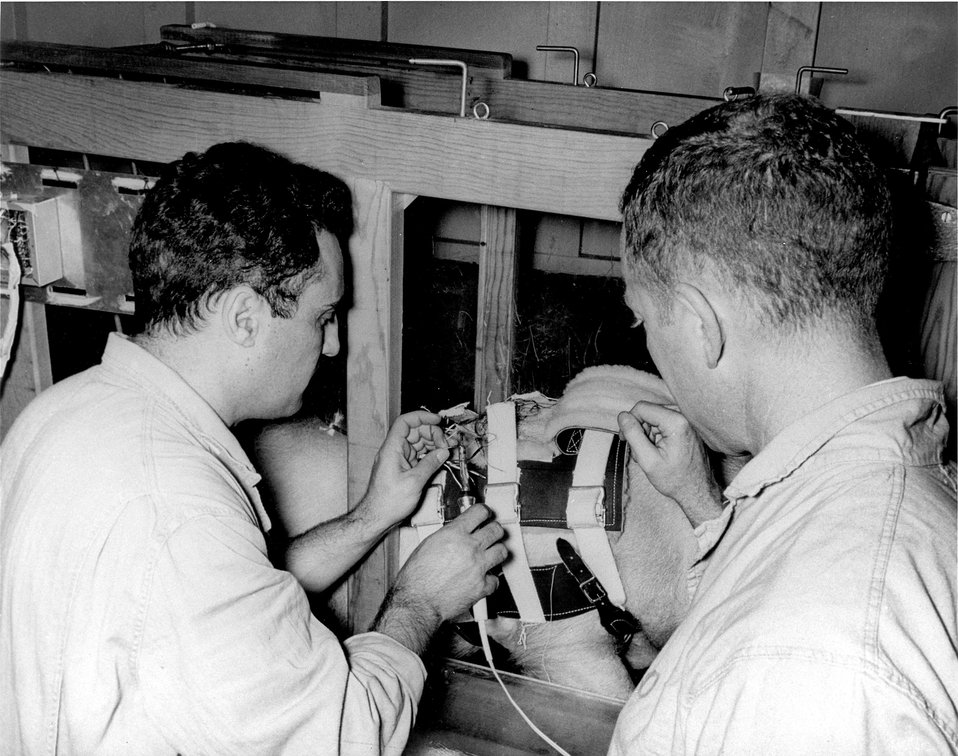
Plugged-in pigs are being used in studies related to development of an artificial heart at the Atomic Energy Commission's Pacific Northwest Laboratory. c. 1969